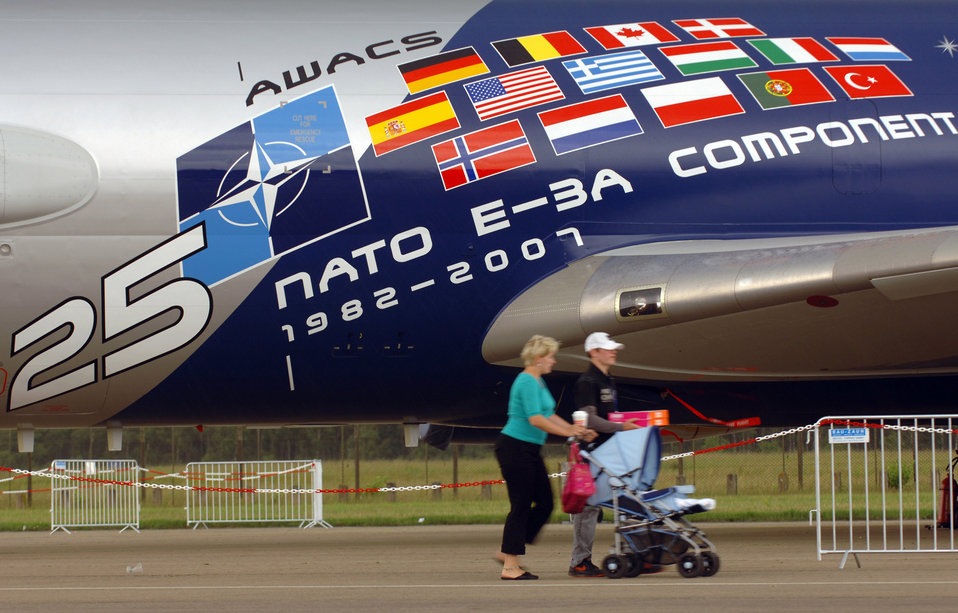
NATO celebrates 25th anniversary of E-3's arrival

Several thousand German, Belgian and Dutch citizens visit Geilenkirchen NATO Air Base, Germany, to attend the 25th anniversary celebration of the NATO E-3 Airborne Early Warning and Control Force aircraft's initial operations out of the NATO installation in northern Germany June 16.